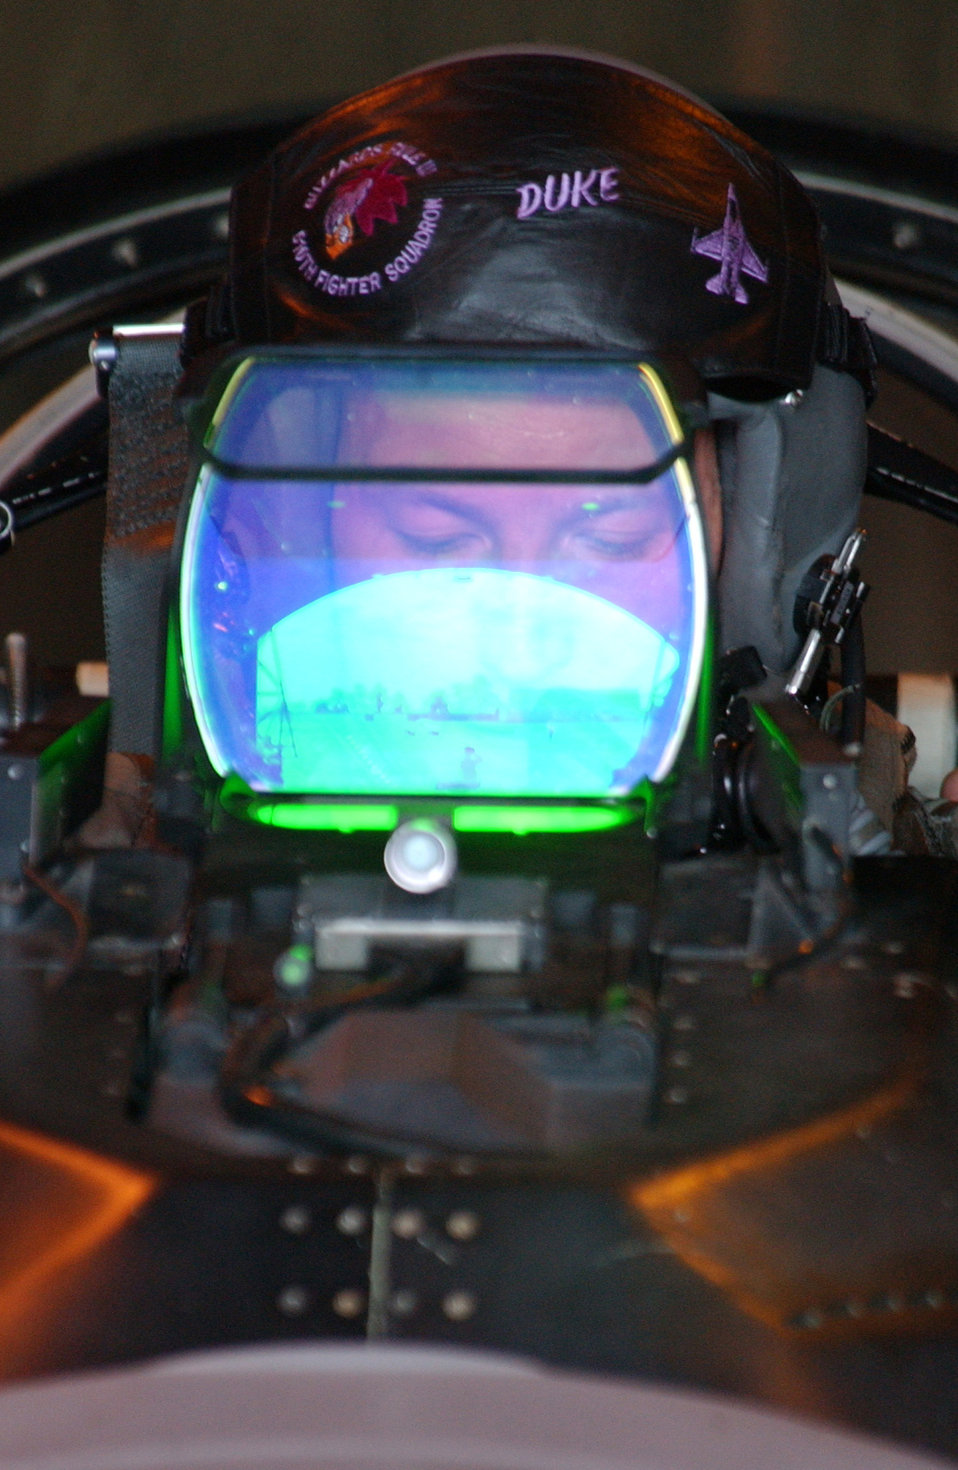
Preparing the bird

AVIANO AIR BASE, Italy -- Capt. Mark Wisher goes over his preflight checks before a training mission here July 20. He is an F-16 Fighting Falcon pilot assigned to the 510th Fighter Squadron.